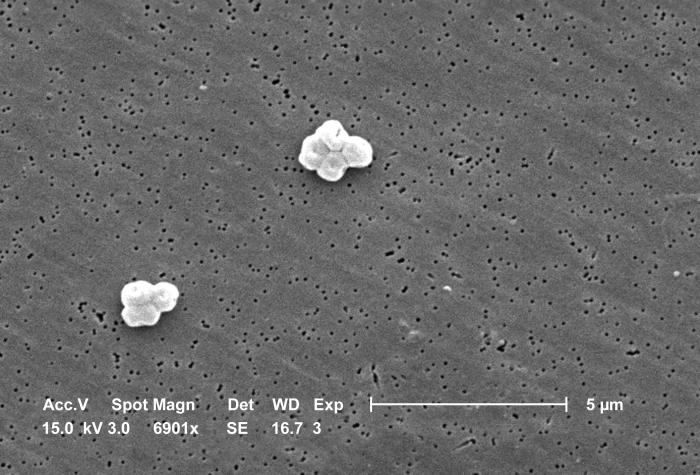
This SEM depicts two clusters of Gram-negative, non-motile Acinetobacter baumannii bacteria; Mag - 6901x.